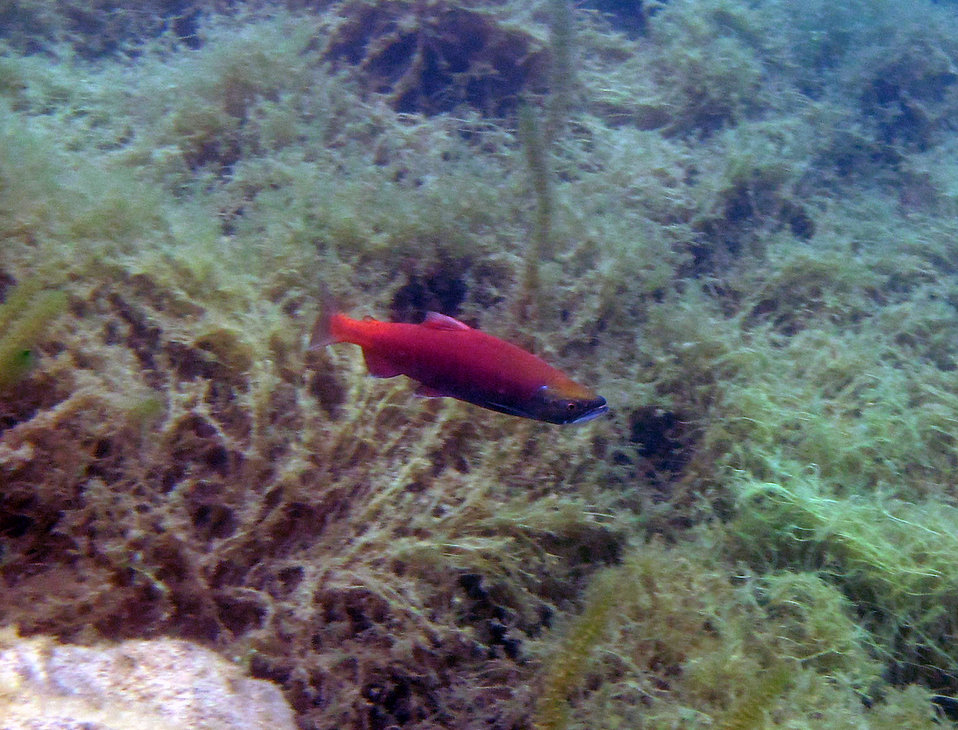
Sockeye life history variation in Hidden Lake